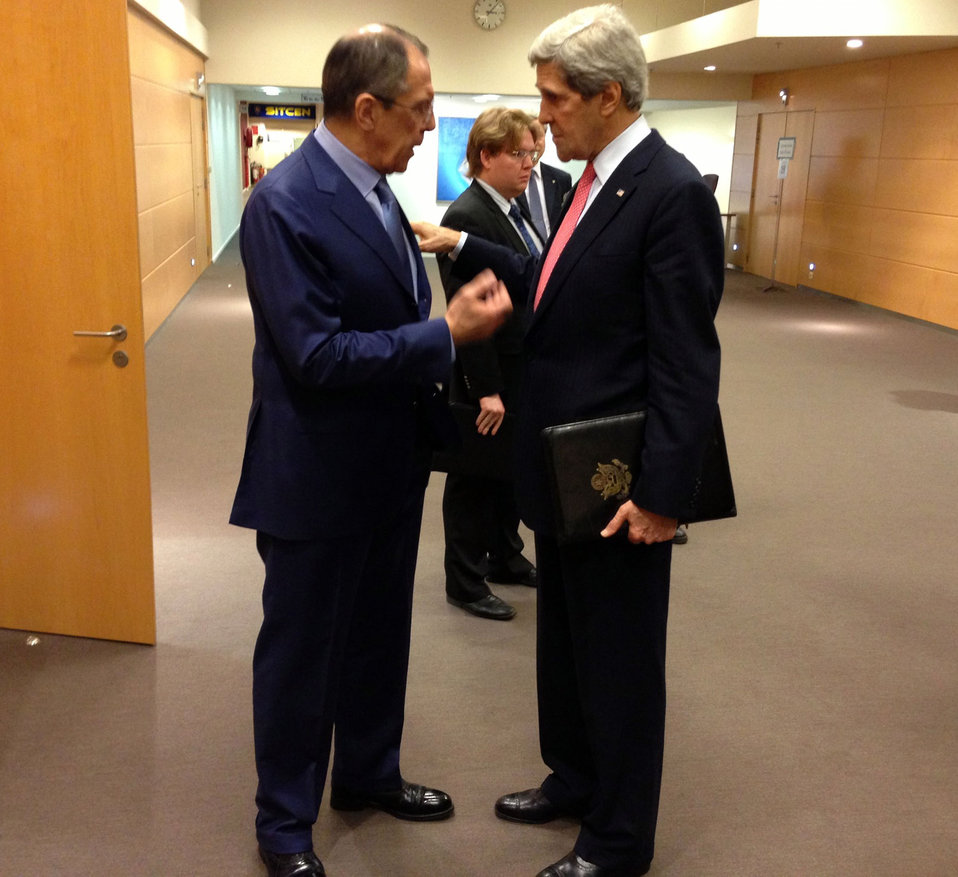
Secretary Kerry and Russian Foreign Minister Lavrov After Their Bilateral Meeting

U.S. Secretary of State John Kerry and Russian Foreign Minister Sergey Lavrov chat after their bilateral meeting in Brussels, Belgium, on April 23, 2013.